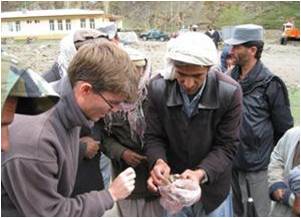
Panjshir: Celebrating Cashmere